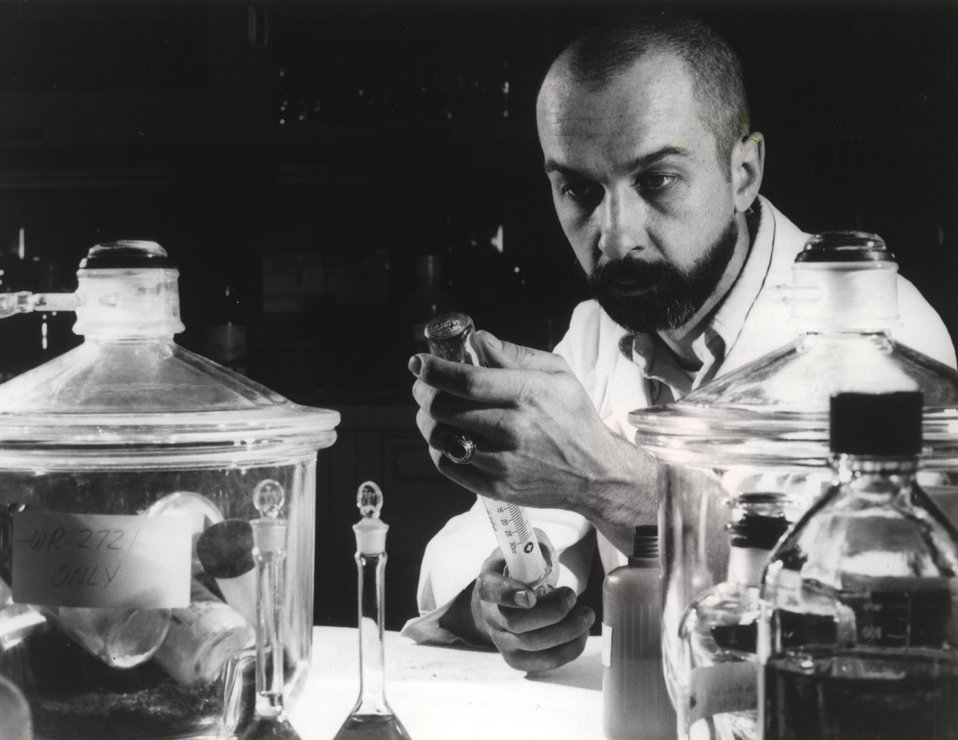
A drug which enables living tissue to withstand over twice the amount of radiation normally required to cause injury is being studied by Oak Ridge National Laboratory biologists to determine if it can be applied to cancer radiotherapy. c. 1974